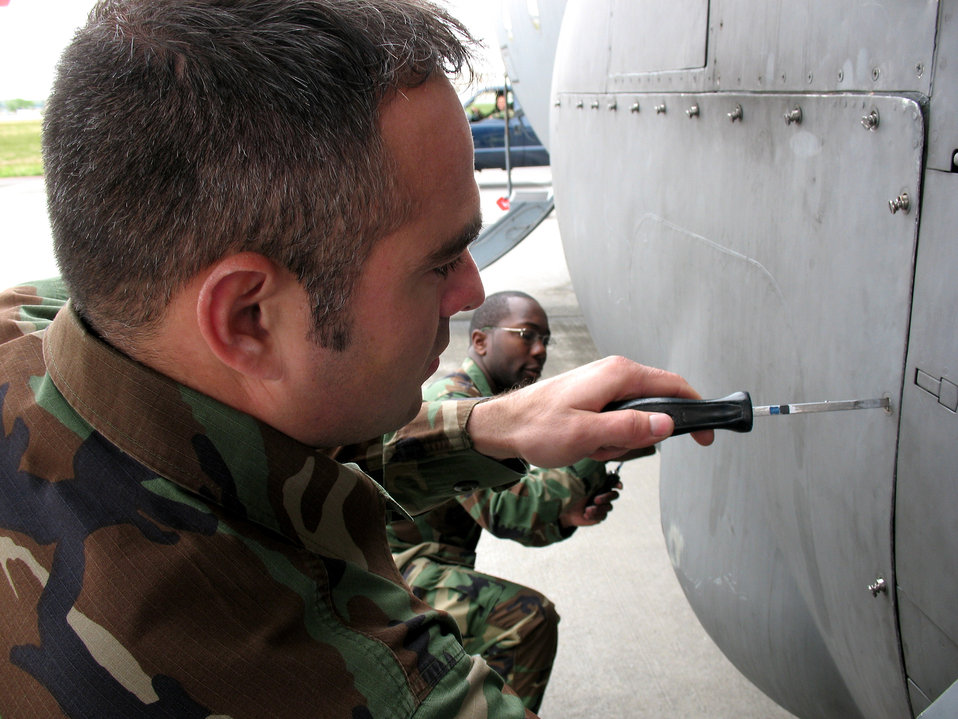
'Unwavering professionalism' encouraged in all servicemembers

Tech. Sgt. Tony Sybirski, a C-130 engine mechanic, and crew chief Airman 1st Class Nicholas Heyward work together to close a panel on a C-130 Globemaster III April 17 at Yokota Air Base, Japan. Sergeant Sybirski and Airman Heyward are assigned to the 374th Airlift Wing Maintenance Squadron.